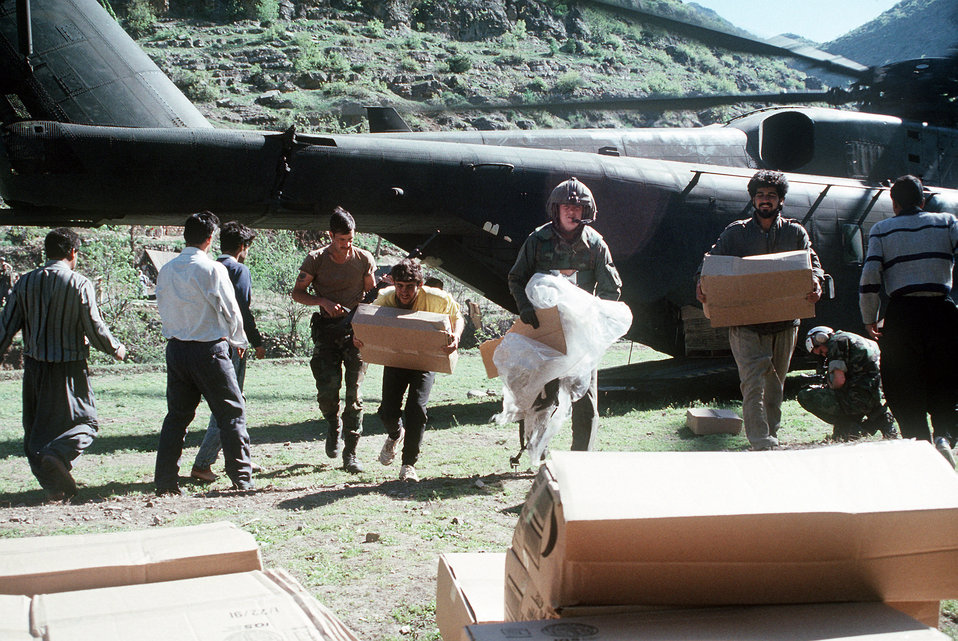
Operation Provide Comfort

1990's -- Airmen and Kurdish refugees unload food supplies from a CH-53E Super Stallion helicopter during Operation Provide Comfort, an Allied effort to aid the refugees who fled the forces of Saddam Hussein in Northern Iraq.